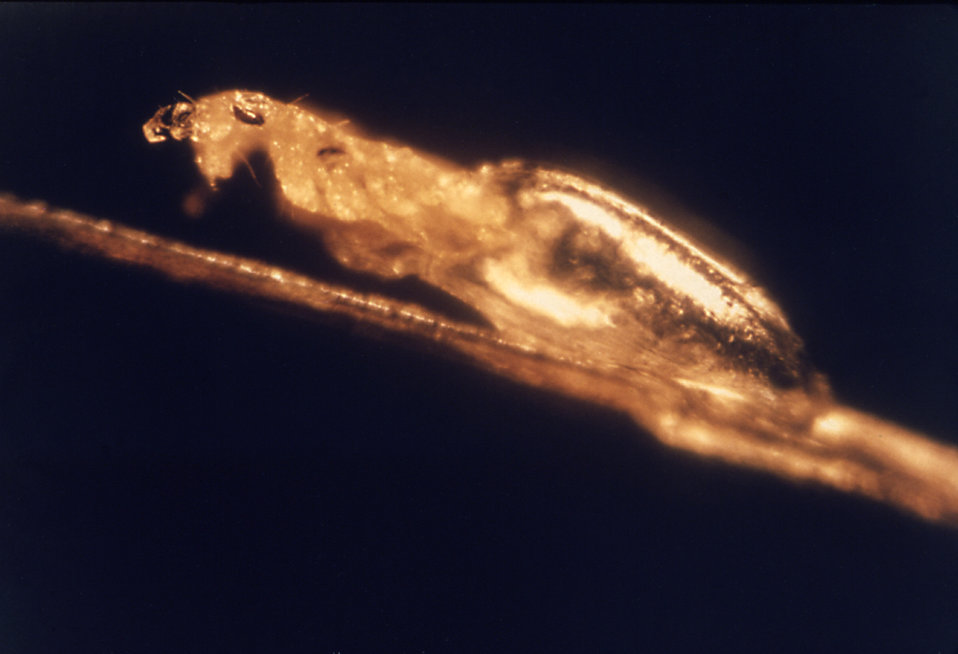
This image was captured while a Head Louse, Pediculus humanus, was emerging from its egg.